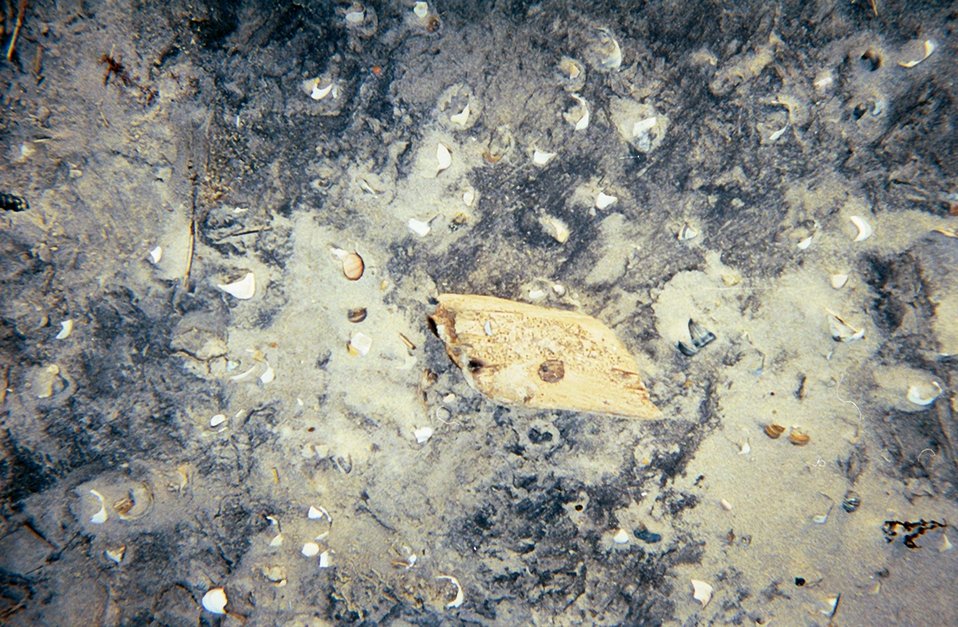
A piece of worm-eaten driftwood amongst other debris of the sea.